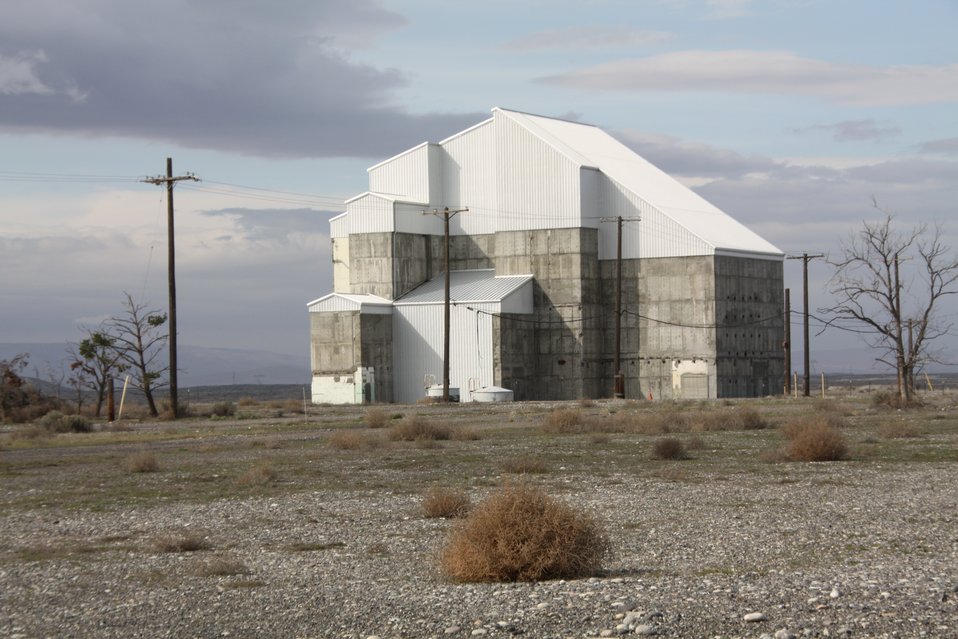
Hanford